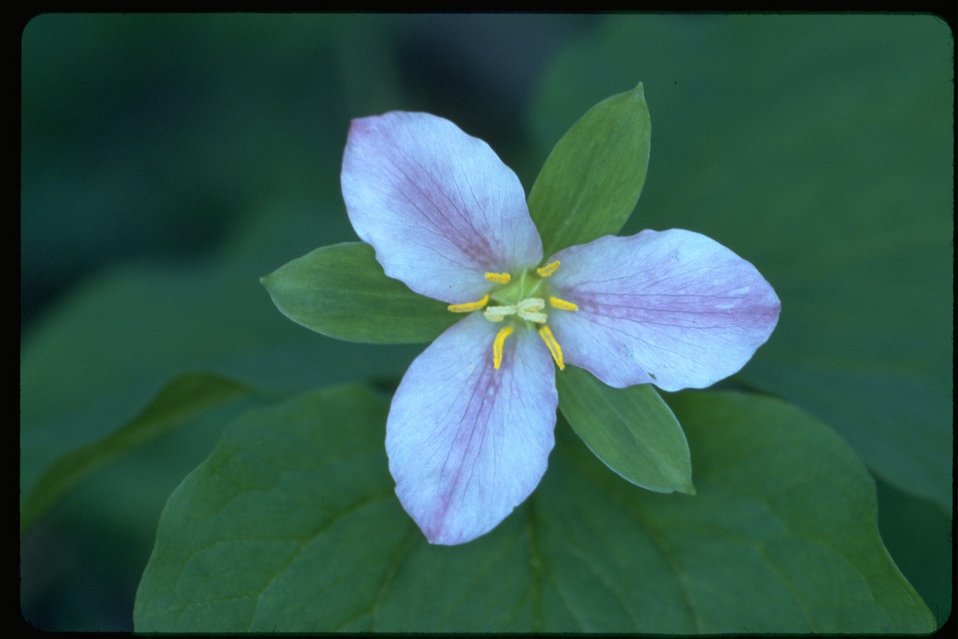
Close up shot of white Trillium with purple stripes.